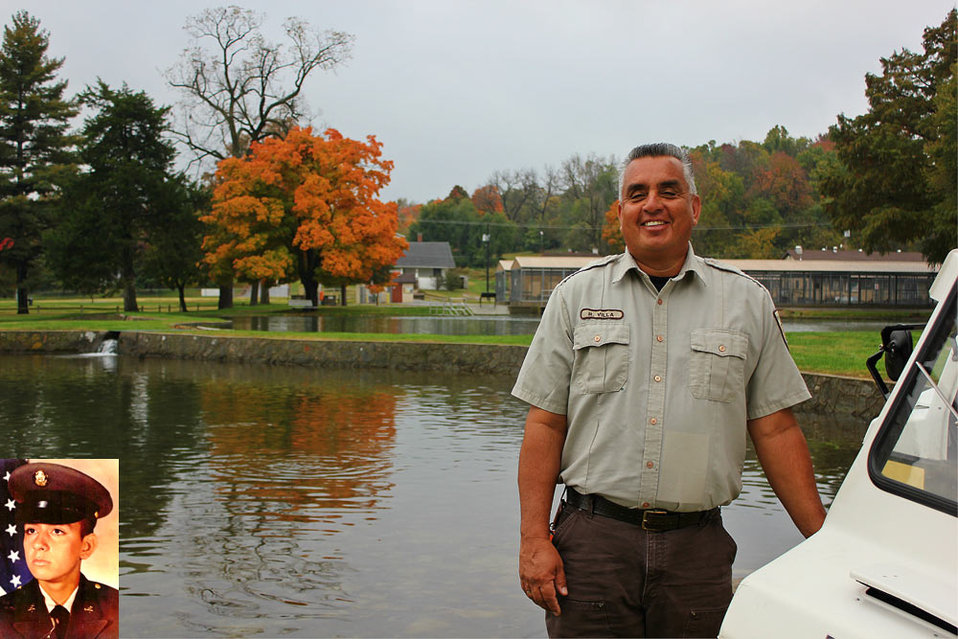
Ray Villa-Midwest Region

Raymond Villa, SFC, Retired, currently works as a Maintenance Mechanic for Neosho National Fish Hatchery in Missouri. He spent 20 years in the Army, retiring at the E7 rank of Sergeant First Class. Ray served in many locations including Hawaii, Kentucky, Colorado, Pennsylvania and the Pacific Islands. He was a Construction Engineer for all his years of service, and began his career at age 17.